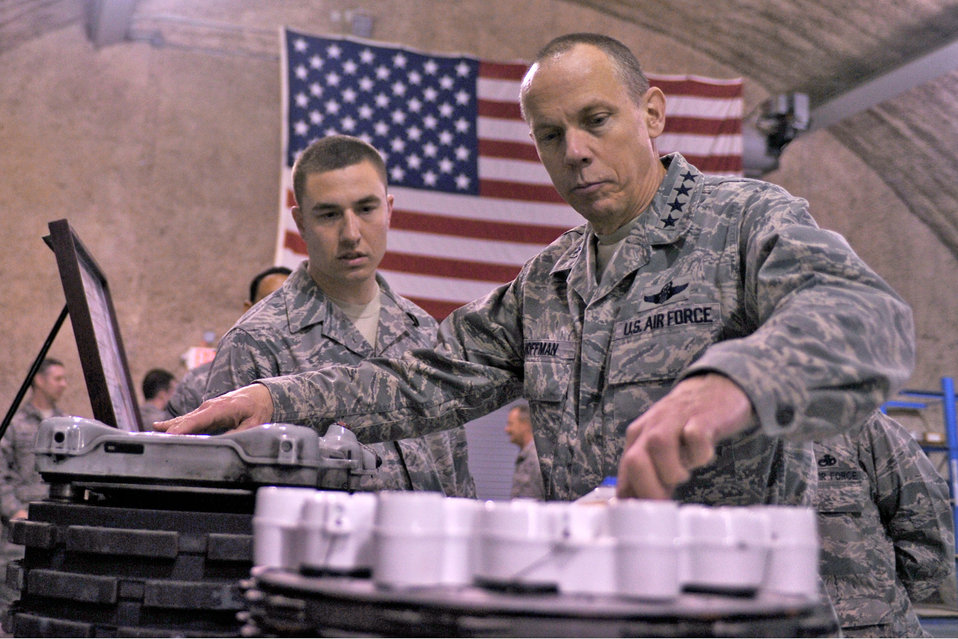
Trip to war region heightens general's resolve

Gen. Donald J. Hoffman (right), examines two aircraft brakes while Senior Airman Stephen Baumgart explains his mission at a location in Southwest Asia. General Hoffman is the commander of the Air Force Materiel Command and Airman Baumgart is assigned to the 379th Expeditionary Maintenance Squadron.